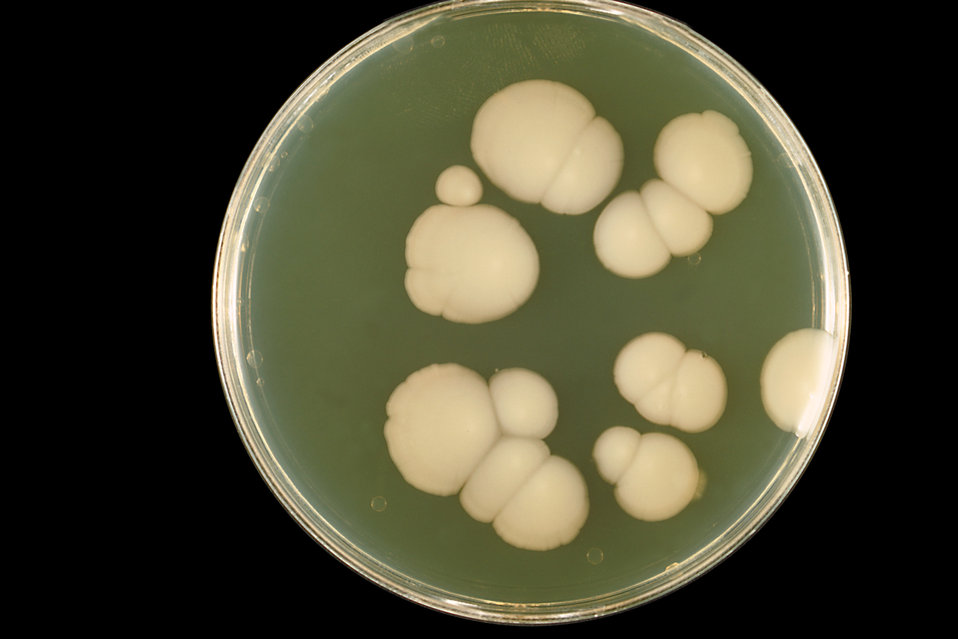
This is an image of a SABHI agar plate culture of the fungus Candida albicans grown at 20�C.